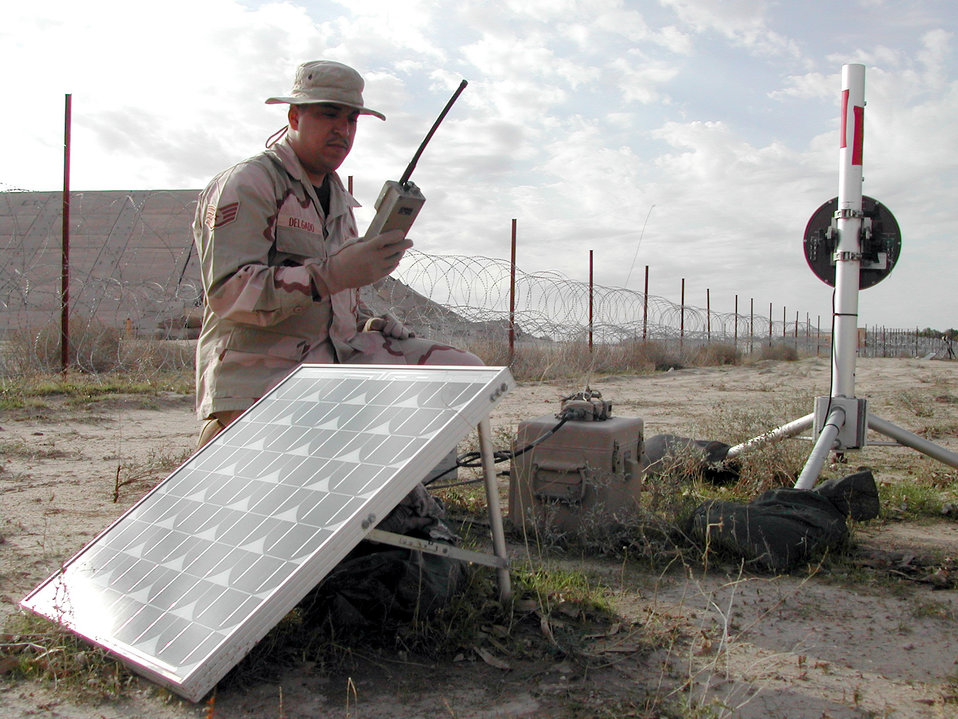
Intruders beware!

SOUTHWEST ASIA -- Staff Sgt. Jose Delgado tests the tactical automated security system at a forward-deployed location. The system helps protect the base from unauthorized entry. When an intruder passes by a sensor, a silent alarm sounds alerting security forces to the location. Delgado is assigned to the 386th Expeditionary Security Forces Squadron.